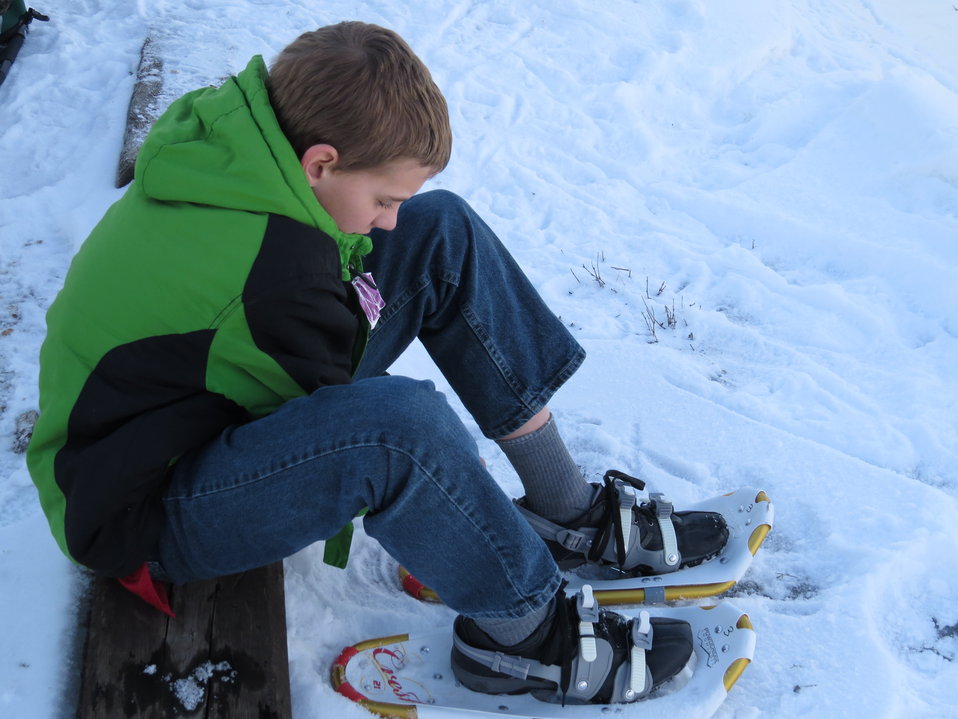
Winterfest 2013

Strapping on his snow shoes for the first time.